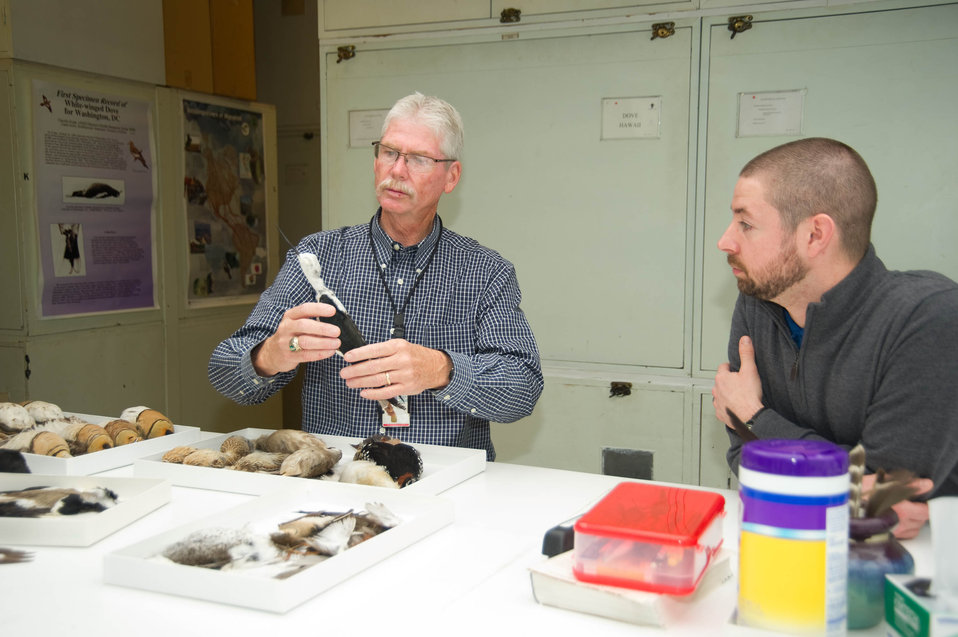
U.S. Department of Agriculture (USDA) Animal Plant Health Inspection Service (APHIS) Wildlife Biologist George Graves and Smithsonian Institution National Museum of Natural History Feather Identification Lab Research Scientist Jim Whatton look over a sample of the birds in the Smithsonian collection on Tuesday, Mar. 19, 2013.